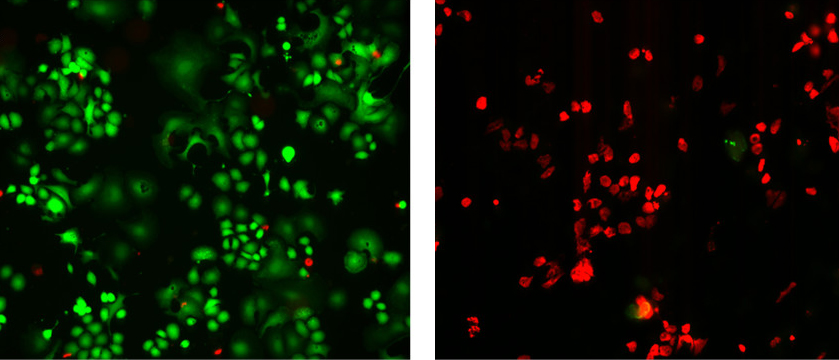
Breast Cancer; Nanotubes; Antibodies

Photomicrographs demonstrate the dramatic impact of using nanotubes to selectively locate and destroy HER2 breast cancer tumors. Tumor cells on the left were treated only with antibodies against the HER2 protein and then irradiated with near-infrared light. Those on the right were treated with a complex of antibodies and nanotubes and then irradiated. Both cultures then were stained with fluorescent dyegreen color indicates live cells while red marks areas where cells have been killed.